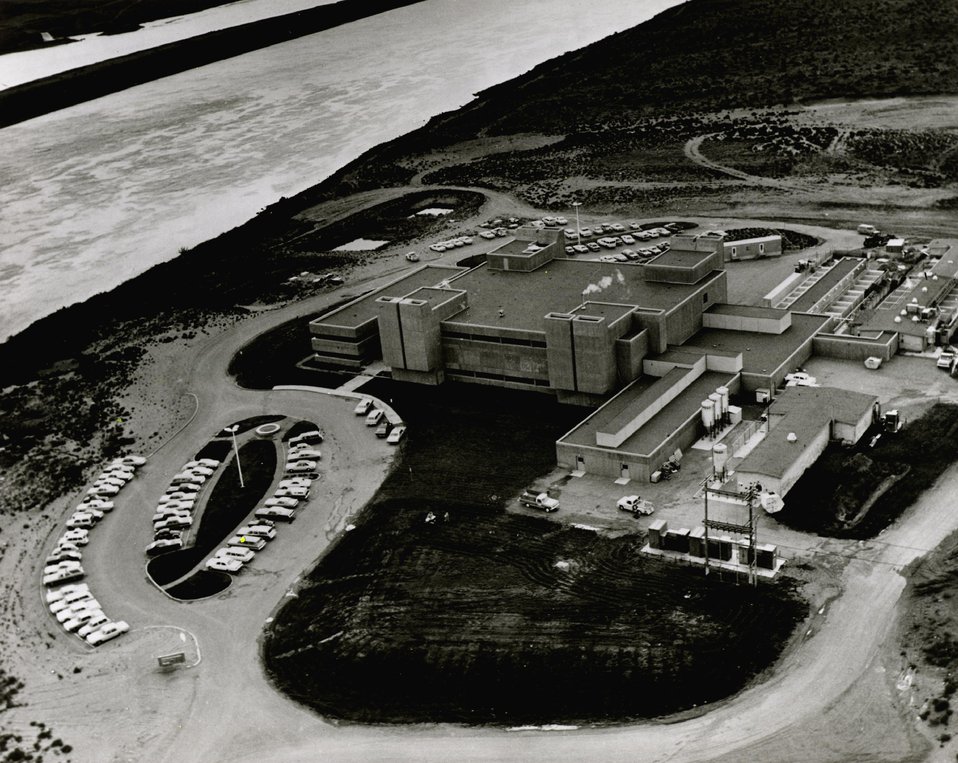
The $5-million Life Sciences Laboratory, operated for the AEC by Battelle at the Pacific Northwest Laboratory. Circa 1973.